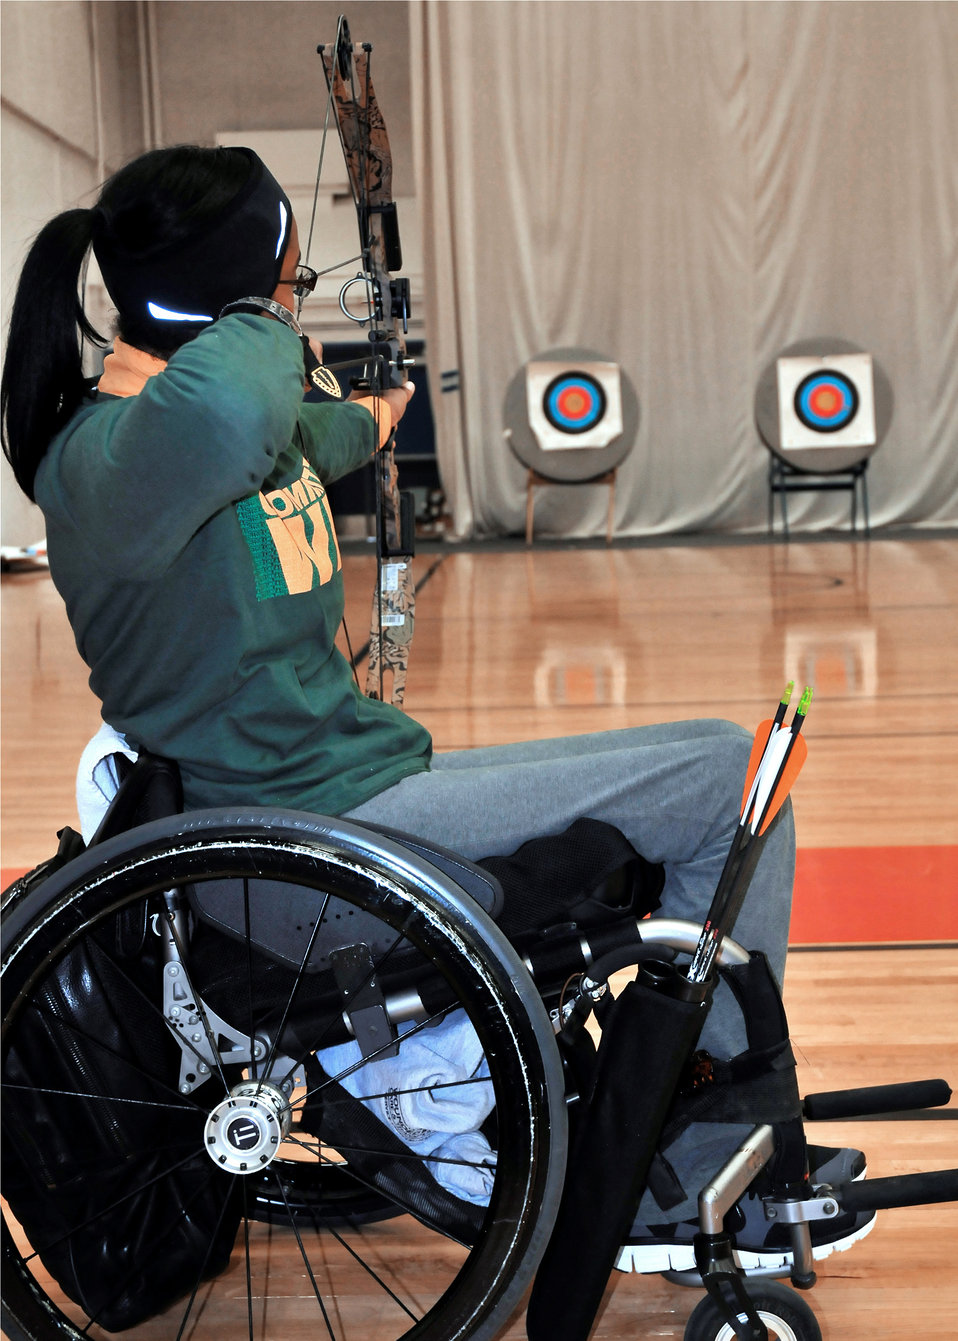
Archers practice patience

Retired Airman First Class Chatriex Goodson brings her compound bow into alignment with the target located 59 feet away, during archery practice May 15, 2011, at the 2011 Warrior Games at the U.S. Olympic Training Center at Colorado Springs, Colo.